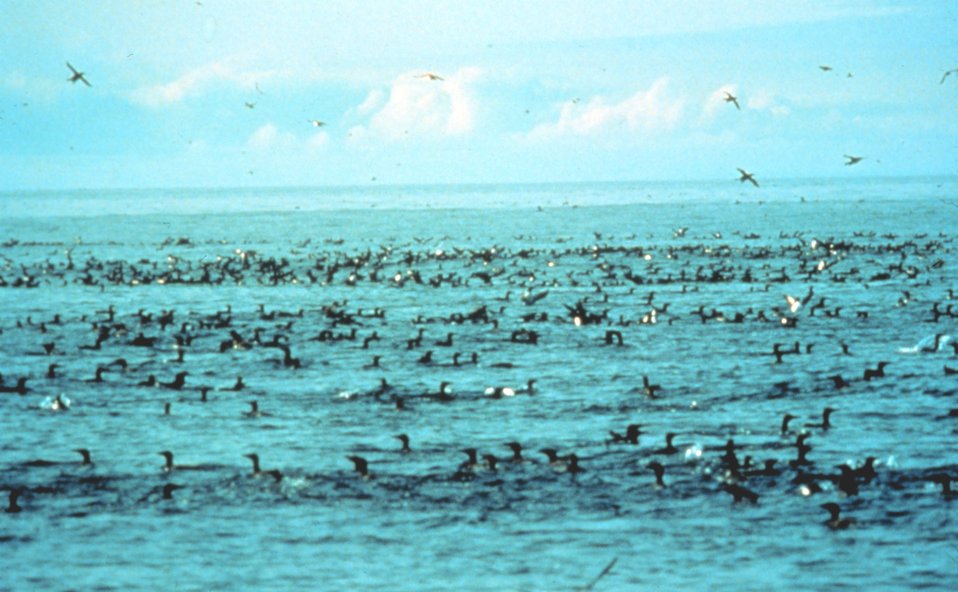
Marine birds feeding